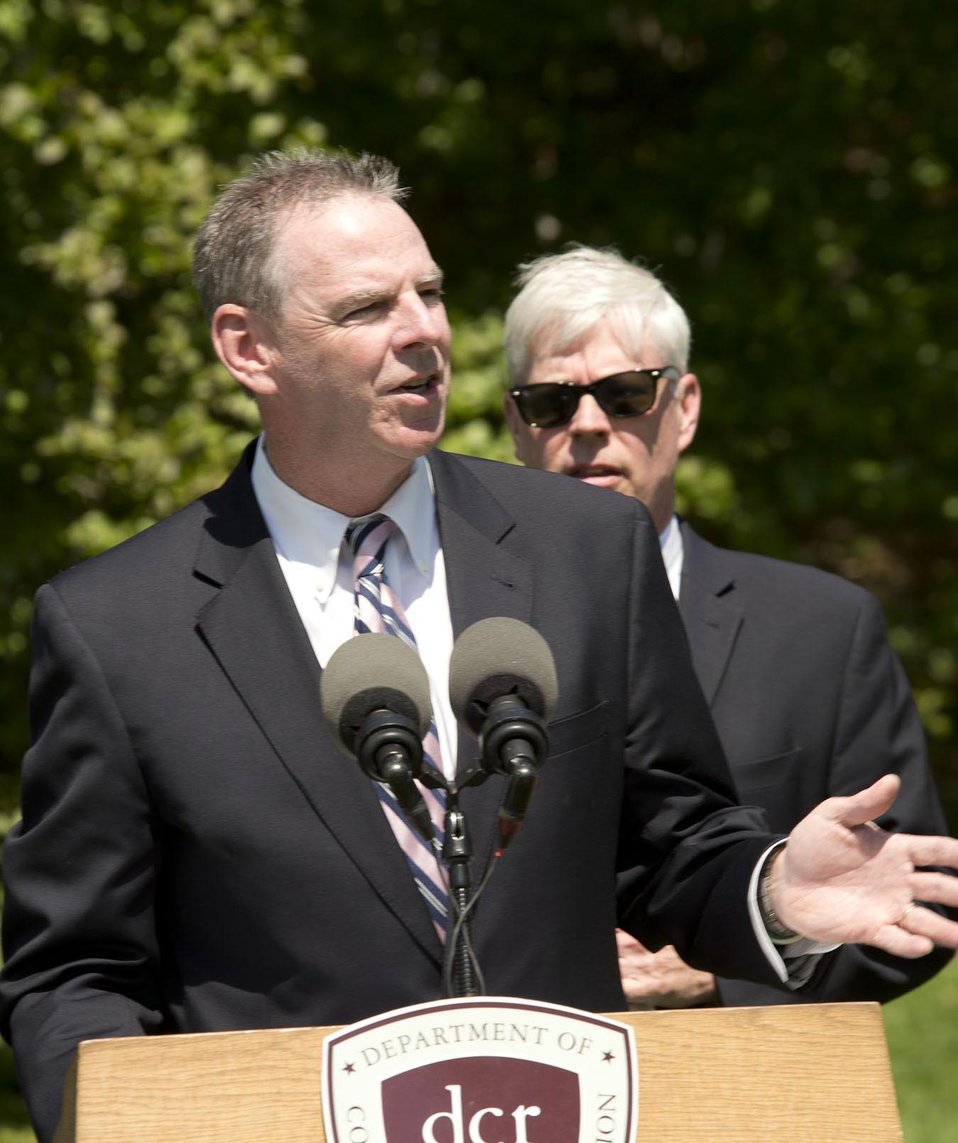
DCR Commissioner Jack Murray speaks at the declaration event for the eradication of Asian Longhorned Beetle (ALB) in Boston, MA on May 12, 2014. Federal, state and local officials joined together to announce that ALB has been eradicated from the Boston regulated area. Boston joins five other areas to declared eradication of ALB in the U.S.